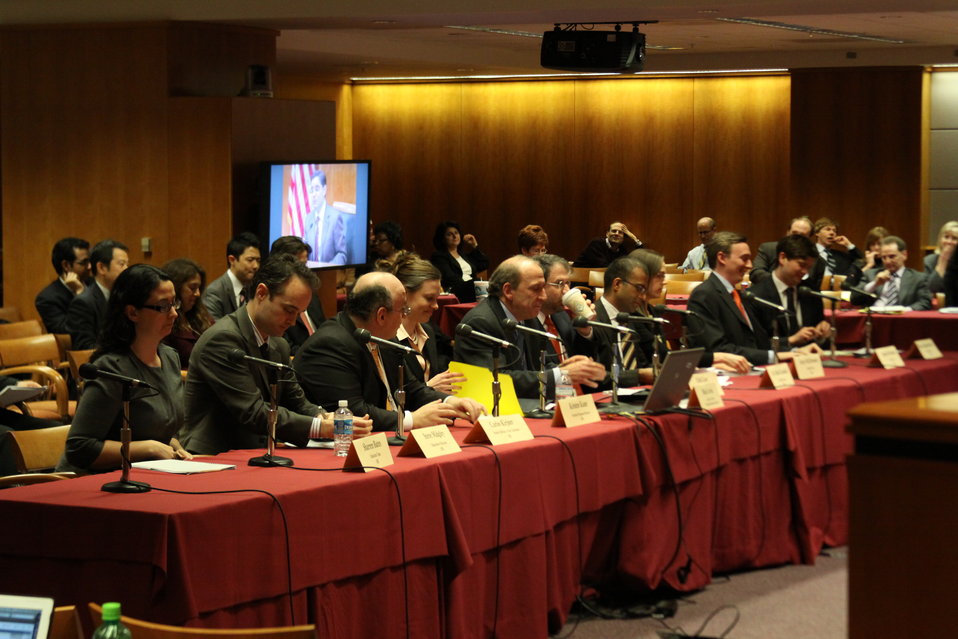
Open Commission Meeting - 2/18/2010

The Federal Communications Commission will hold an Open Meeting in Washington, DC. on February 18, 2010, which will include the following items:

E-Rate: An Order and Notice of Proposed Rulemaking to enable schools that receive funding from the E-Rate program to allow members of the general public to use the schools' Internet access during non-operating hours at no additional cost to the Universal Service Fund. This order and notice do not permit or require any changes to E-Rate applications due on February 11, 2010; Ex Parte Reform: A Notice of Proposed Rulemaking to improve the transparency and effectiveness of the FCC's decision-making process by reforming the ex parte rules; Procedural Reform: A Notice of Proposed Rulemaking to enhance the efficiency, openness, and transparency of the Commission's proceedings by improving and modernizing certain organizational and procedural rules; National Broadband Plan Status Report: Commission staff will report on the status of the National Broadband Plan, providing a framework for the national purposes portion of the Plan.